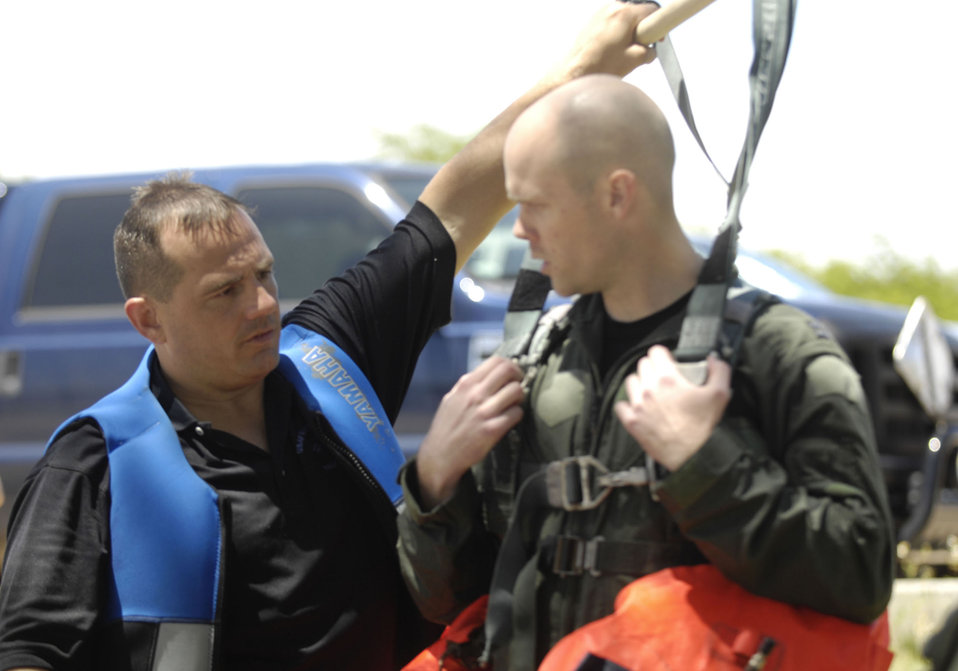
SERE instructors ensure water survival skills

Tech. Sgt. Sherwood Brown (left) explains to an aircrew member about the next phase of refresher water survival training being held for the 535th Airlift Squadron in the waters adjacent to Hickam Air Force Base, Hawaii. The member will be pulled through the water by a jet ski which will simulate a parachute being caught in the wind. Sergeant Brown is an Air Force survival, evasion, resistance and escape specialist assigned to the 15th Operations Support Squadron at Hickam.